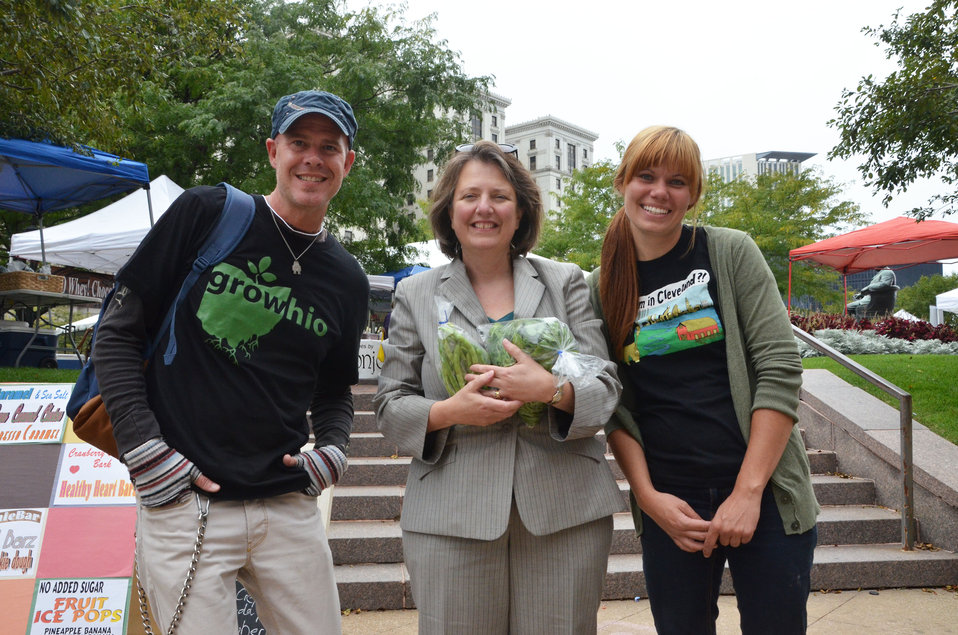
(L to R) A visitor to Downtown Farmers' Market at Public Square, Agriculture Deputy Secretary Kathleen Merrigan and market manager of the Downtown Farmers' Market at Public Square Ashley Shaw enjoy the market on Sept. 21, 2012 in Cleveland, Ohio.